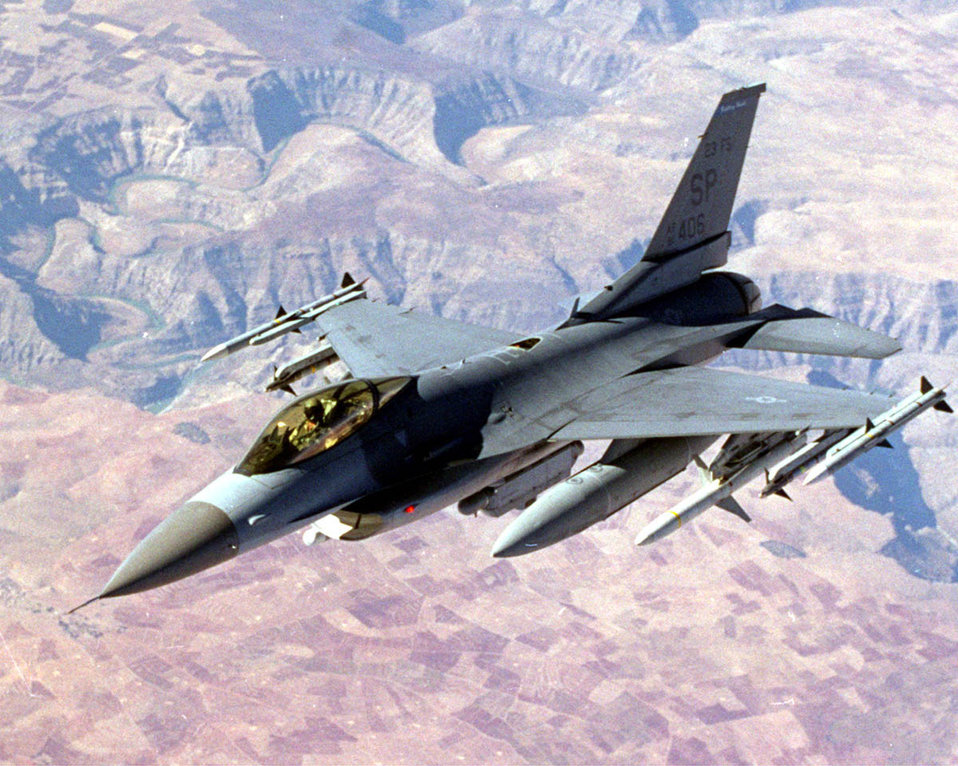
F-16

FILE PHOTO -- An F-16 Fighting Flacon cruises over the landscape.